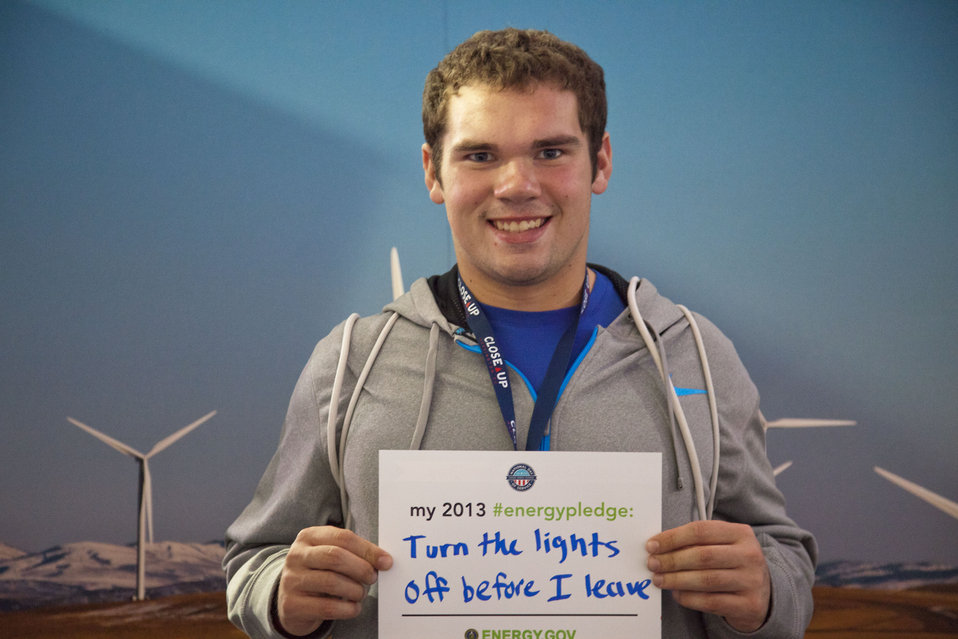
What's your #energypledge?